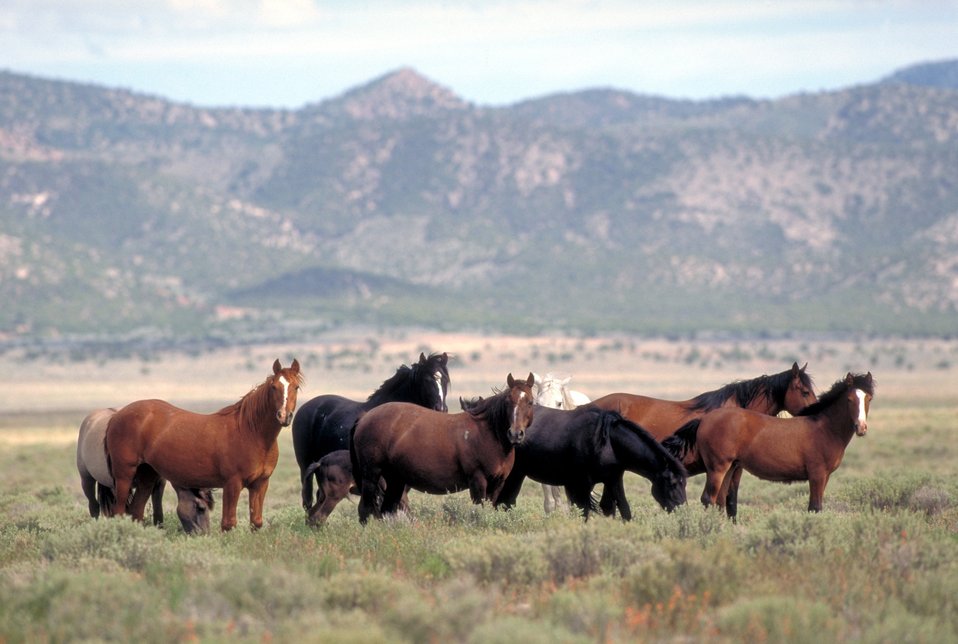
Onaqui Herd near Dugway, Utah.